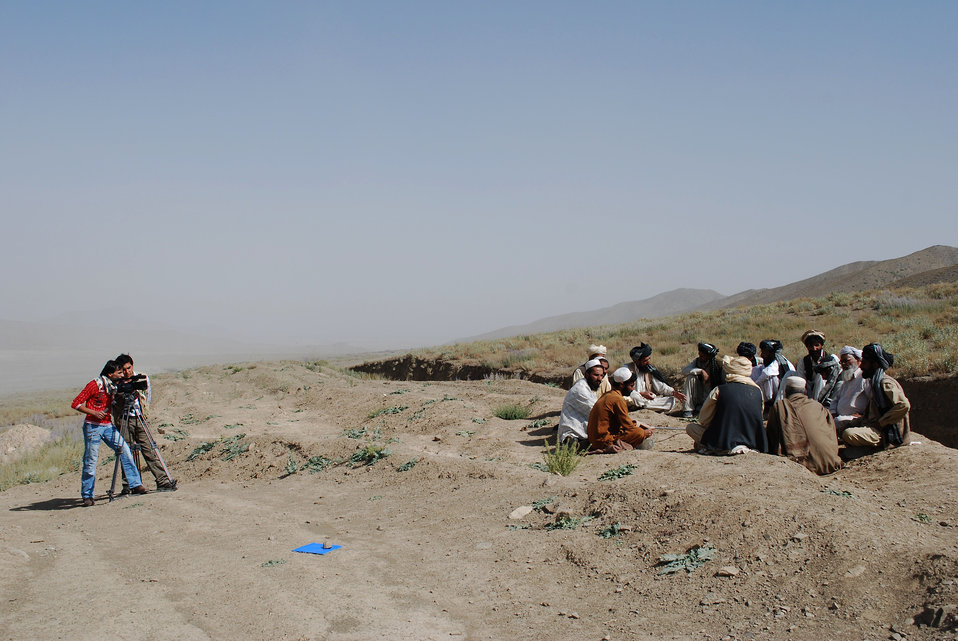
'On the Road' in Paktya Province